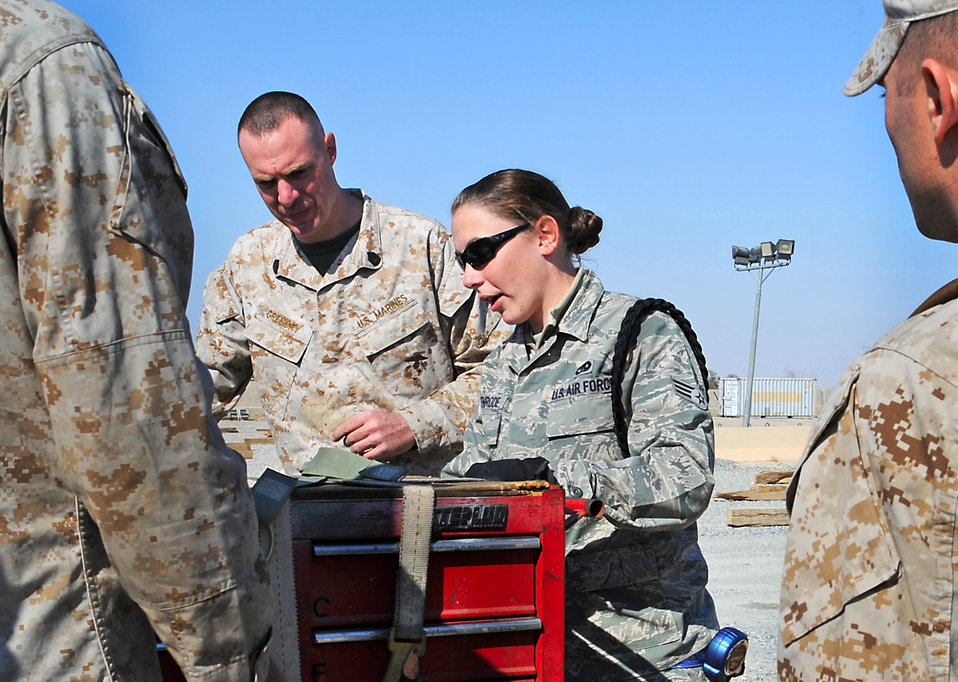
386th AEW transit keeps Marines moving

Senior Airman Chelsea Eckenrode helps ensure that Marines from the 26th Marine Expeditionary Unit have the proper guidence while they strap down their cargo and prep for inspection recently in Southwest Asia. More than 1,300 Marines and Sailors and 370,000 pounds of cargo were transported to a forward location with the help of Airmen from the 386th Expeditionary Logistics Readiness Squadron. Airman Eckenrode is a hazardous material joint-inspector assigned to the 386th ELRS.